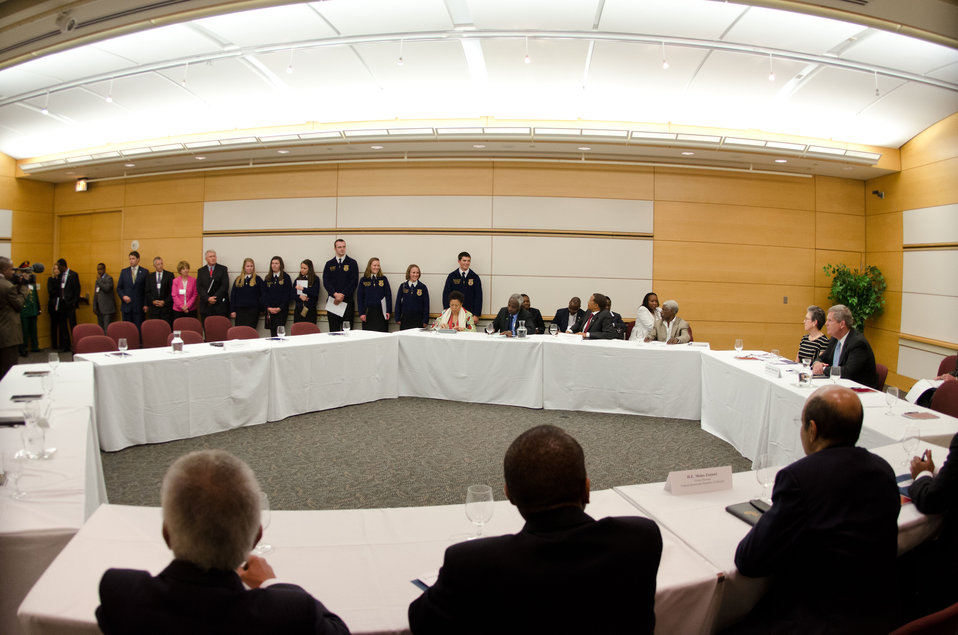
Agriculture Secretary Tom Vilsack introduces the FFA state officers (standing right- left Matthew Dodson, Jenna Moser, Sarabeth Royer, Tyler Claypool, Bree Wilkins, Janie Jackson, and Caroline Hutchison) he invited to attend the African Heads of State conference at the Ronald Reagan Federal Building in Washington, D.C., on Friday, May 18, 2012.